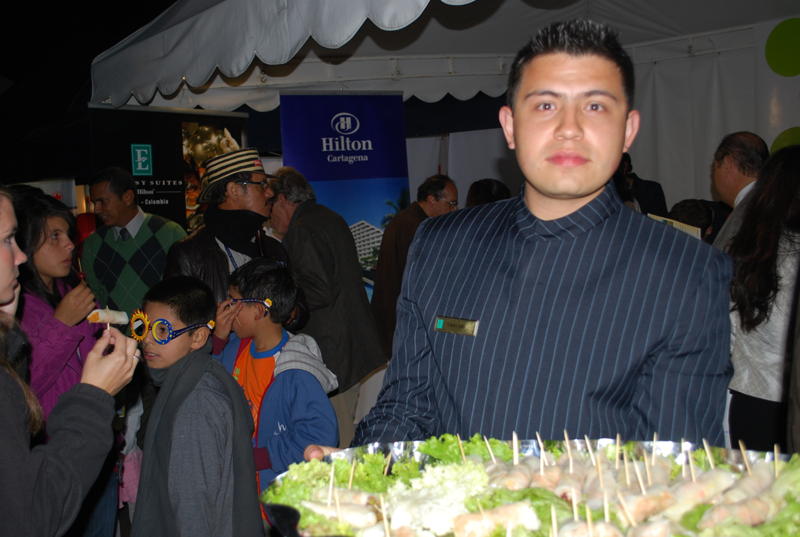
A Hilton Hotel Waiter Offers Hors d’Oeuvres

A waiter from the Hilton Hotel, one of the U.S. companies that sponsored the event, offers hors d'oeuvres during the U.S. Independence Day reception at the U.S. Embassy Bogotá in Colombia, on July 2, 2010.